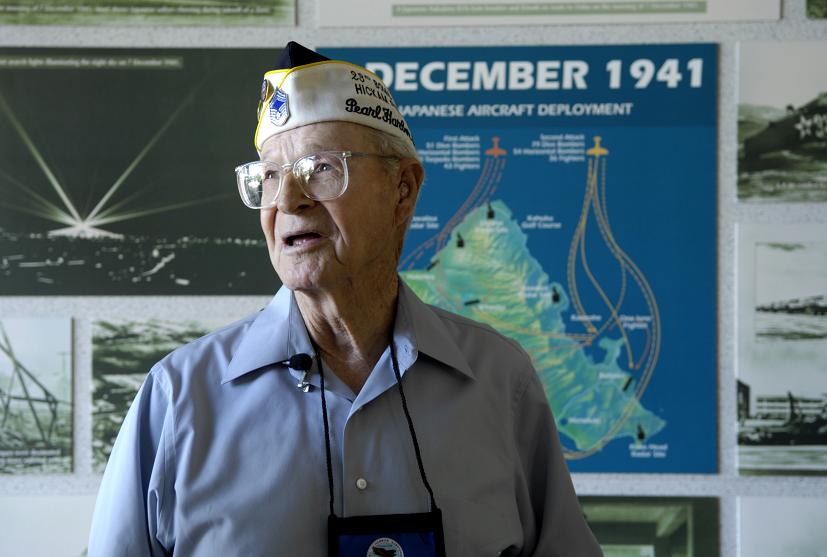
Retired Chief Master Sgt. Ralph Barnett looks at displays in the Pacific Air Forces Headquarters building Dec. 4, 2006 at Hickam Air Force Base, Hawaii. On Dec. 7, 1941 the PACAF building was a consolidated barracks where then Sgt. Barnett lived.